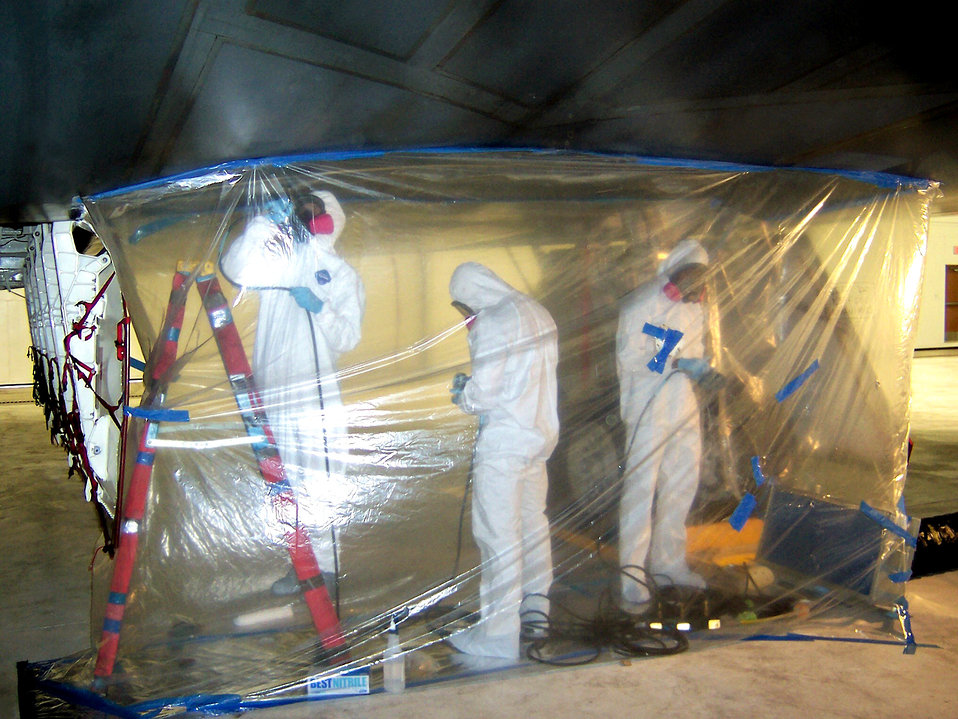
Maintainers keep B-2s soaring during deployment

Airmen with the 36th Expeditionary Aircraft Maintenance Squadron sand off degraded paint coatings on a B-2 Spirit bomber at Andersen Air Force Base, Guam. The aircraft was restored once new paint coatings were applied. The plastic tent is used to contain the sanding dust created while removing the paint coatings.